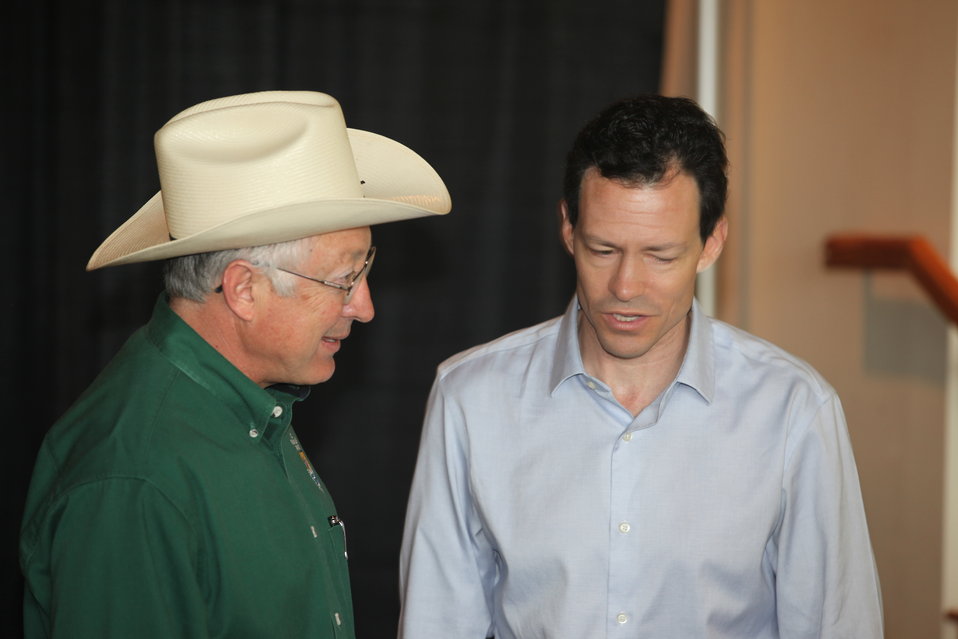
Ken Salazar & Evan Hirsche from NWRA

Secretary of the Interior Ken Salazar speaks with Evan Hirsche, President of the National Wildife Refuge Association.